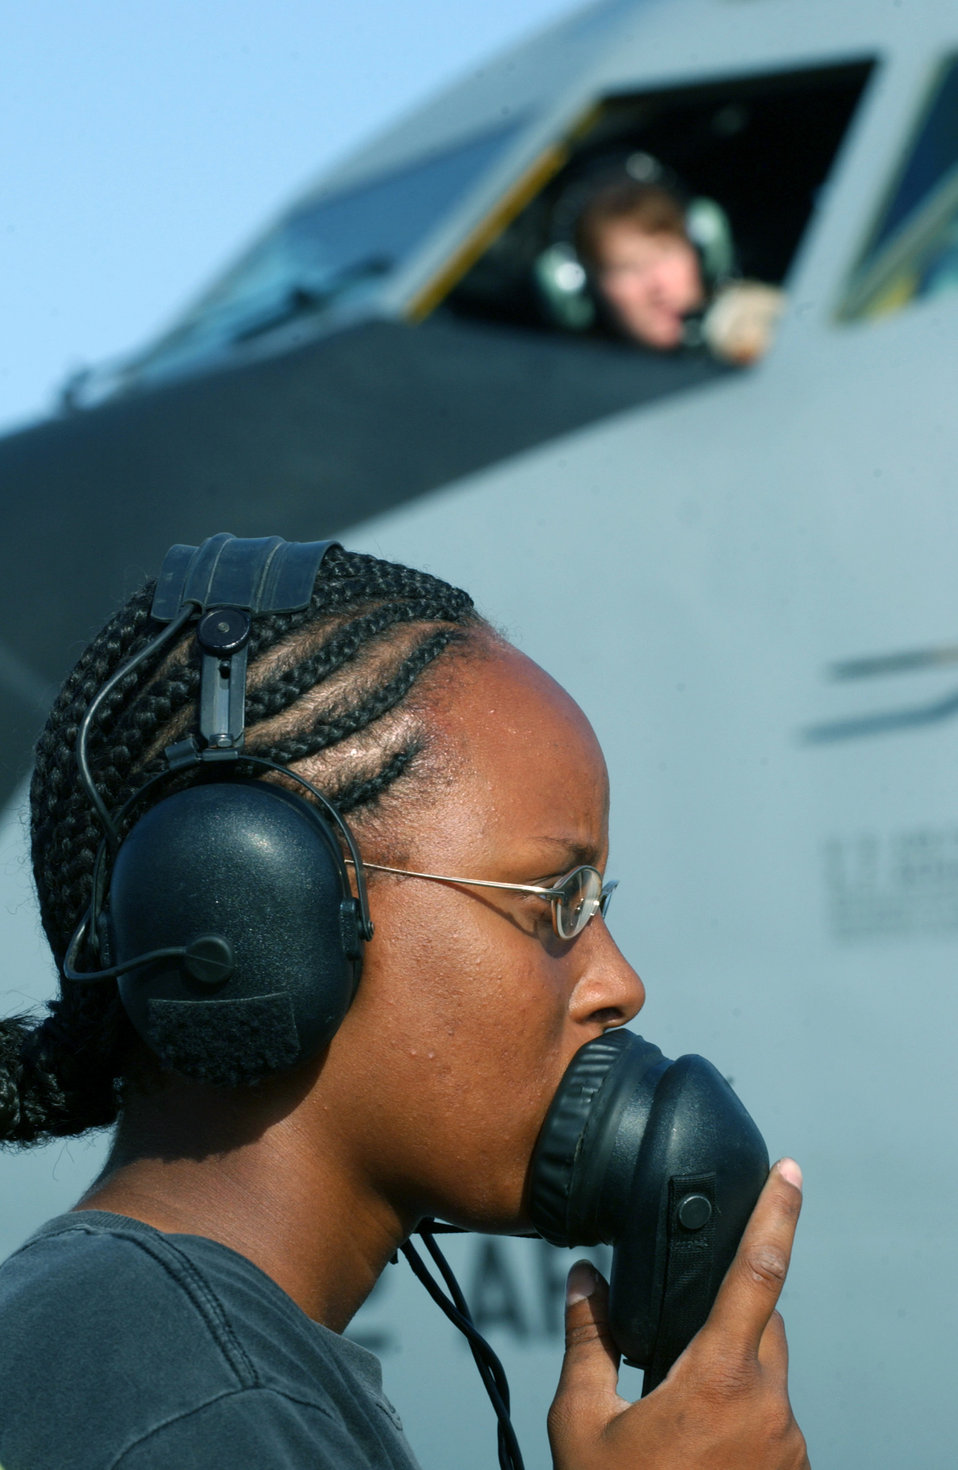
Gas 'n go

SOUTHWEST ASIA -- Senior Airman Enden Surles talks to Capt. Jaimee Summers (background) via the intercom system during preflight checks Aug. 17 at a forward-deployed location supporting Operation Iraqi Freedom. Airman Surles is a communications navigation specialist, and Captain Summers is a KC-135 Stratotanker pilot. They are from the 92nd Air Refueling Wing at Fairchild Air Force Base, Wash.